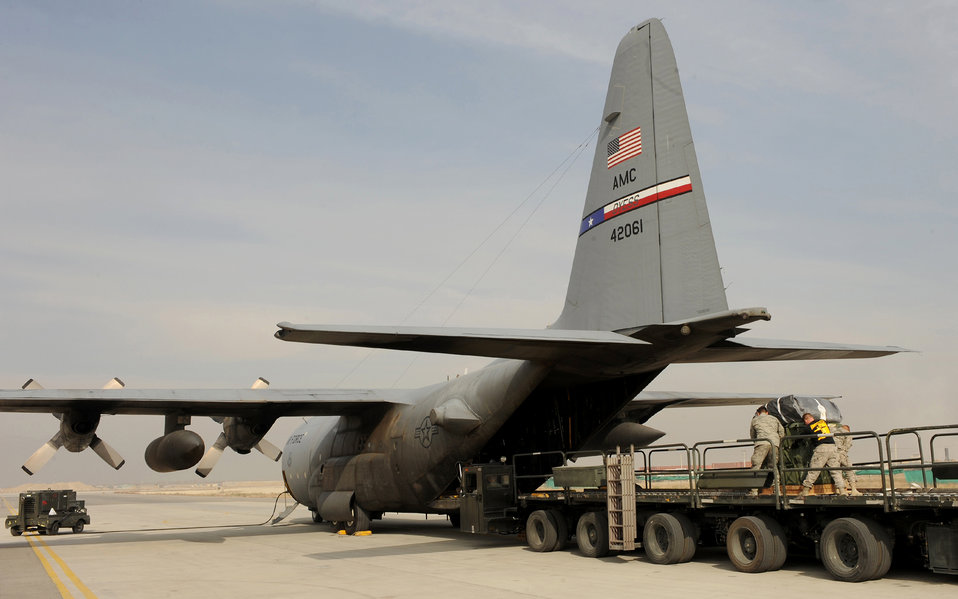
2010 Airdrop Record

Airmen and Soldiers help load Container Delivery System bundles into the back of a C-130 Hercules recently at Bagram Airfield, Afghanistan. For the first time since the 386th Air Expeditionary Wing stood up more than a decade ago, a crew from the wing's 737th Expeditionary Airlift Squadron flew over the mountains of Afghanistan and dropped more than 22,000 pounds of supplies to ground troops Nov. 21, 2010, validating the wing's ability to perform airdrop missions in support of Operation Enduring Freedom.